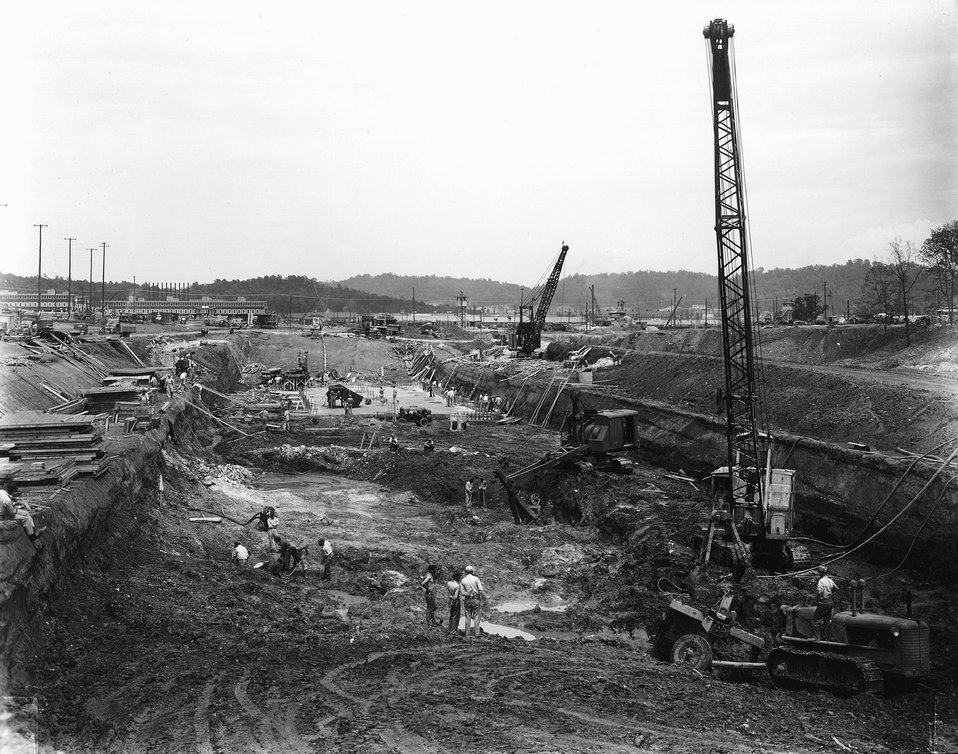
Switch House Construction. c. 1945